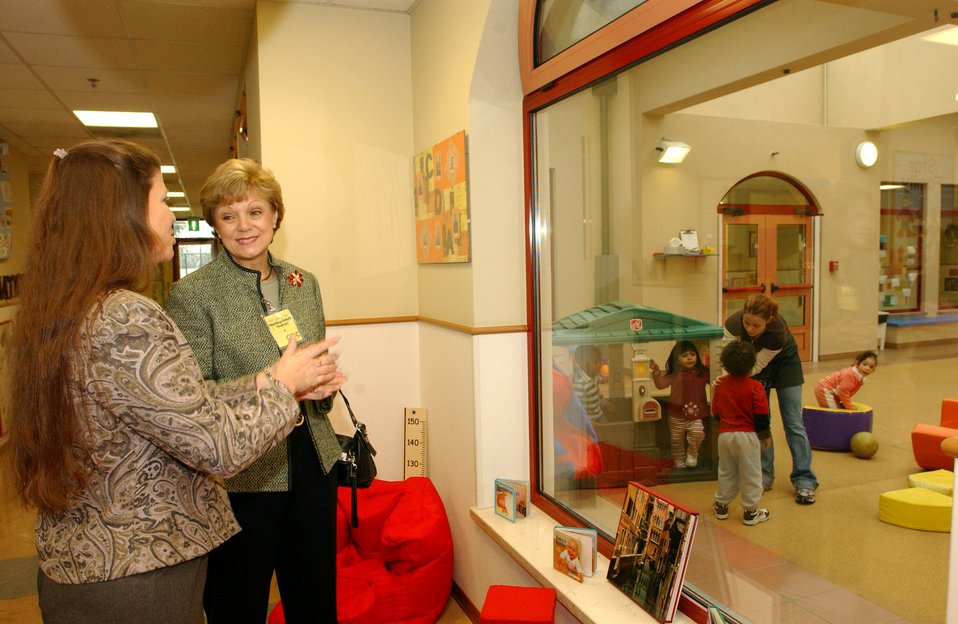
Caring for Airmen and their families

Rebecca White explains the different activities that are offered to children ranging from 6 weeks to school age to Barbara Wynne Dec. 5 at the Aviano Air Base Child Development Center in Italy. Secretary of the Air Force Michael W. Wynne and his wife are visiting with Airmen to get an orientation of the 31st Fighter Wing. Secretary Wynne is responsible for the affairs of the Department of the Air Force, and ensures the Air Force can meet its current and future operational requirements. Ms. White is the Aviano AB CDC manager.